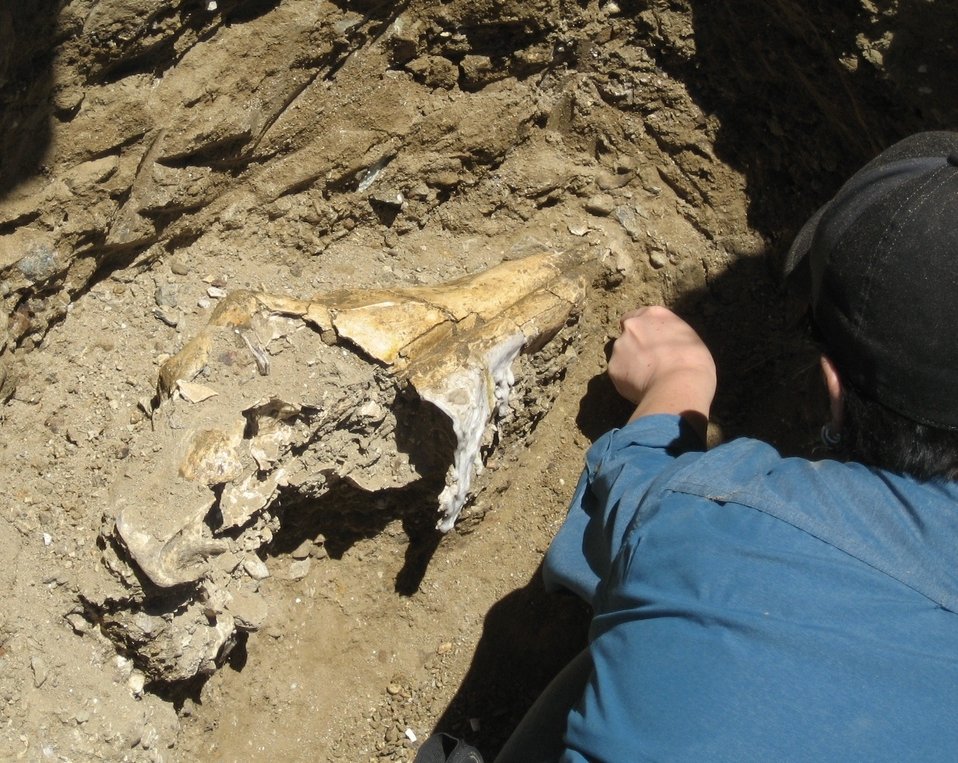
Two AF bases take top DOD honors for environmental work

Archeologists uncover a fossilized horse skull in a cliff by the sea at Vandenberg Air Force Base, Calif., recently. Archeologists have identified more than 1,600 prehistoric archaeological sites on Vandenberg AFB.